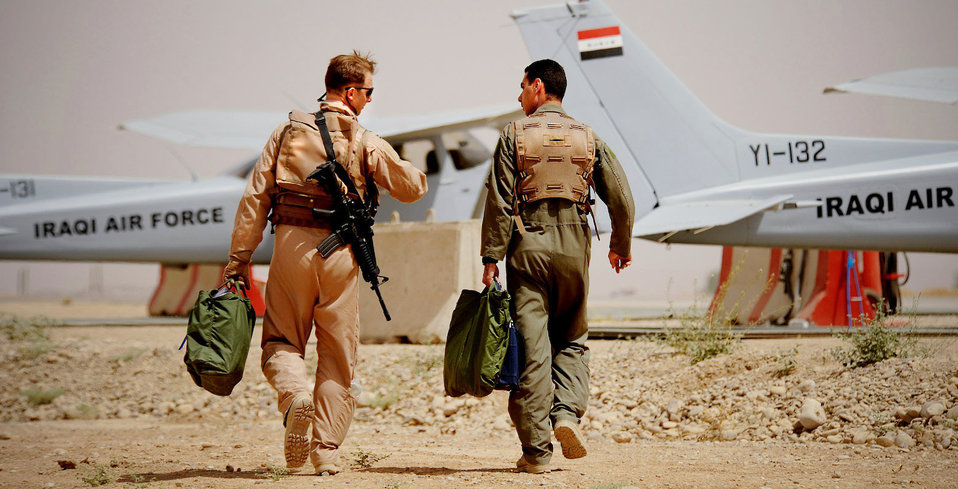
Ready for the flight check...

Capt. Jamie Riddle and an Iraqi Flight Instructor School student walk to the flightline before a mission at Kirkuk Air Base, Iraq. The Iraqi air force established the school for Iraqi pilots. Captain Riddle is an instructor pilot with the 52nd Flying Training Squadron.